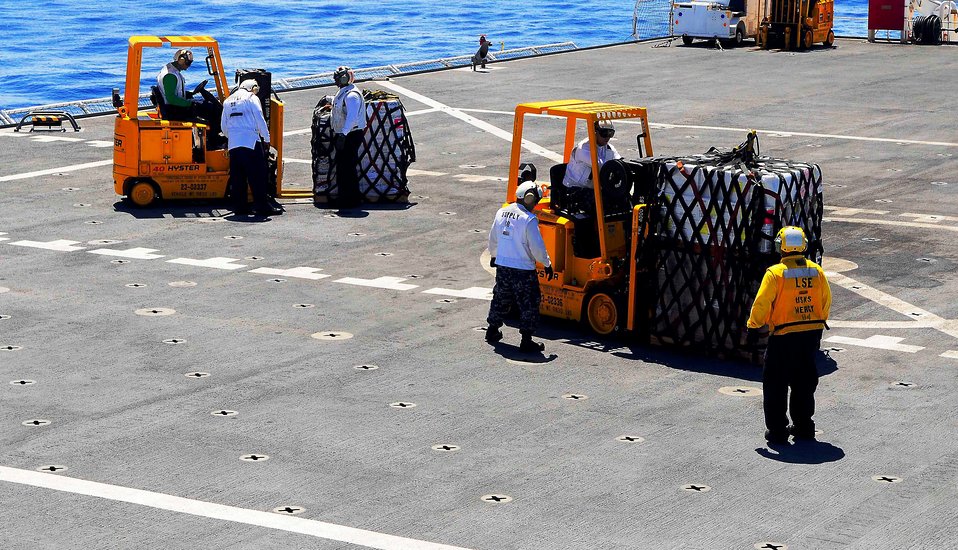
Sailors Clear Pallets of Cargo From Flight Deck

Sailors clear pallets of cargo from the flight deck aboard the Military Sealift Command hospital ship USNS Mercy (T-AH 19) during a vertical replenishment at sea in the Pacific Ocean on June 29, 2010. Mercy is conducting Pacific Partnership 2010, the fifth in a series of annual U.S. Pacific Fleet humanitarian and civic assistance endeavors to strengthen regional partnerships.